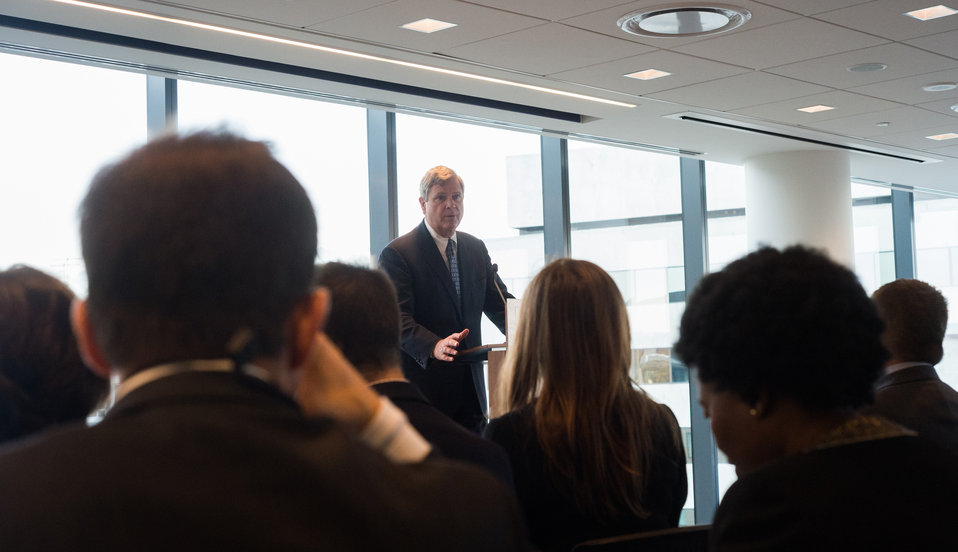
Agriculture Secretary Tom Vilsack speaks to embassy representatives at a Share the Season event organized by the U.S. Department of State Office of the Chief of Protocol Diplomatic Partnership Division at the Business Roundtable (BRT) in Washington, D.C. on Thursday, Nov. 21, 2013. BRT is a non-profit association of chief executive officers of leading U.S. companies that encourages embassies and diplomats to be active in local community service projects.